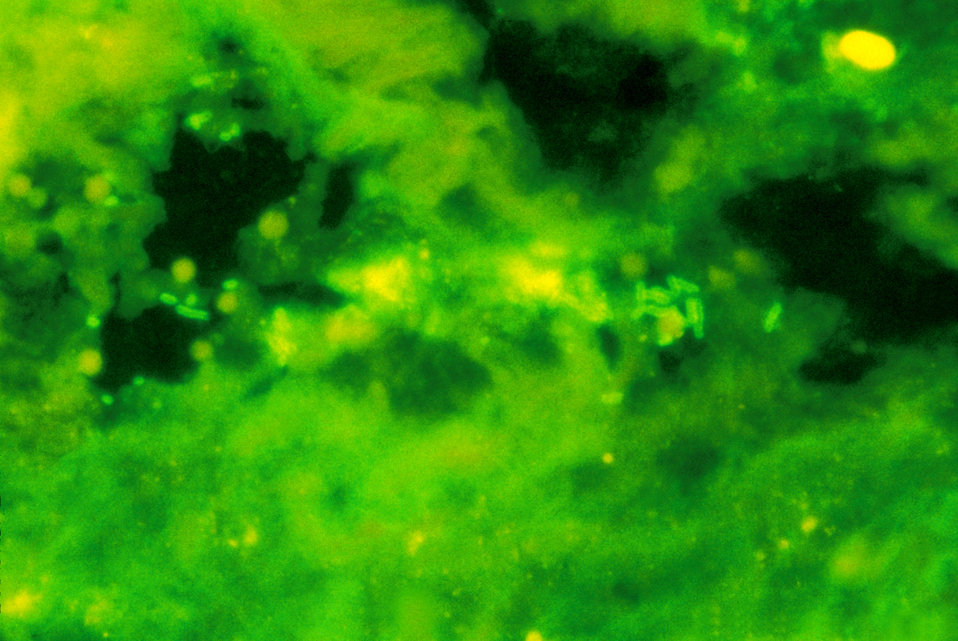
Escherichia coli in FA stained section of intestine from an 8-month old child suffering from chronic diarrhea.